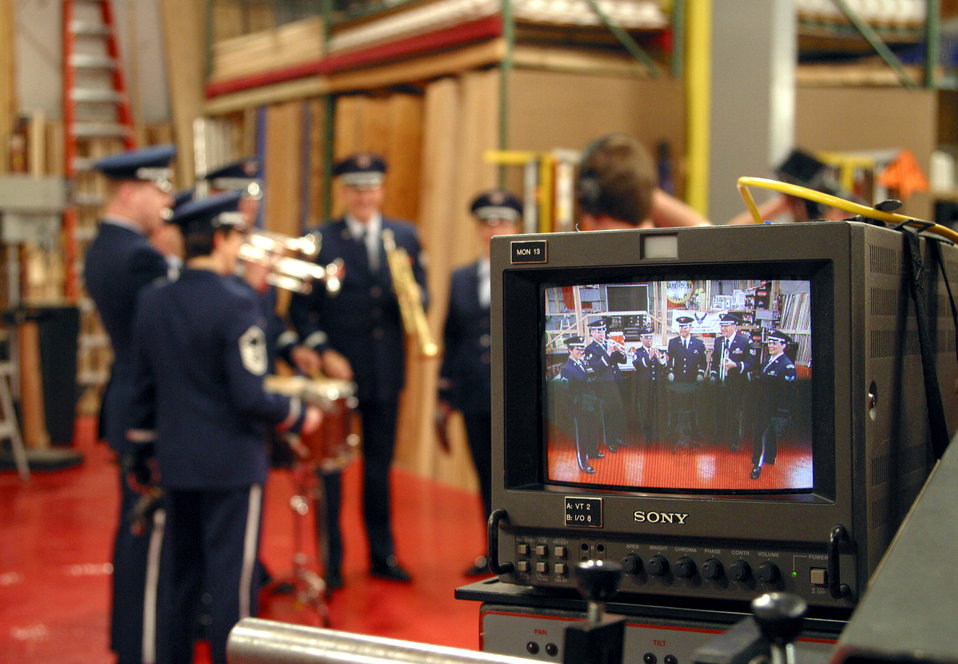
Opening act

KNOXVILLE, Tenn. -- The U.S. Air Force Band of Mid-America, Scott Air Force Base, Ill., and the U.S. Air Force Band of the Golden West, Travis AFB, Calif., open the show with a small musical number. Each band sent a three-person team here to participate in the Do-It-Yourself Network television show, Warehouse Warriors. The Band of Mid-America won the “battle of the bands” competition.